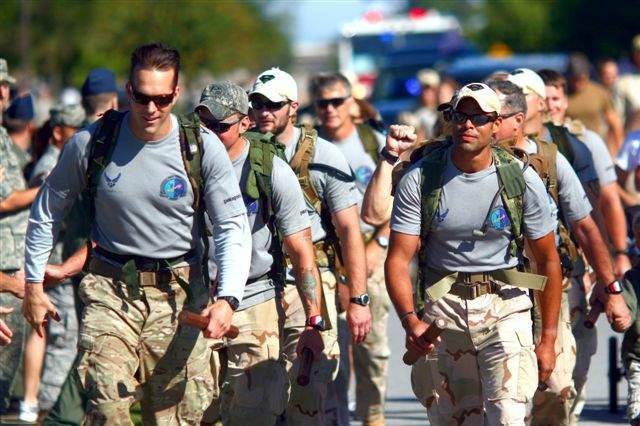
Brothers in arms march for cause

Twelve special tactics Airmen conclude an 824-mile memorial rucksack march Oct. 16, 2009, at Hurlburt Field, Fla. The men marched from Lackland Air Force Base, Texas, to Hurlburt Field to honor Staff Sgt. Timothy Davis, a combat controller assigned to the 23rd Special Tactics Squadron when Field when he was killed in action Feb. 20, 2009, and 12 other fallen special operations forces members.